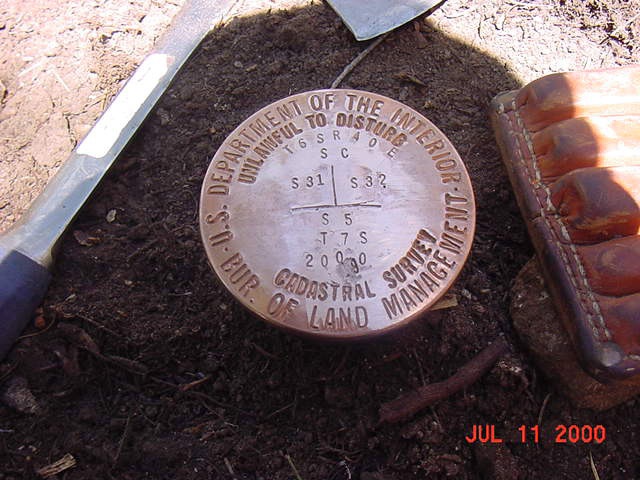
Cadastral Surveys Idaho Bureau of Land Management